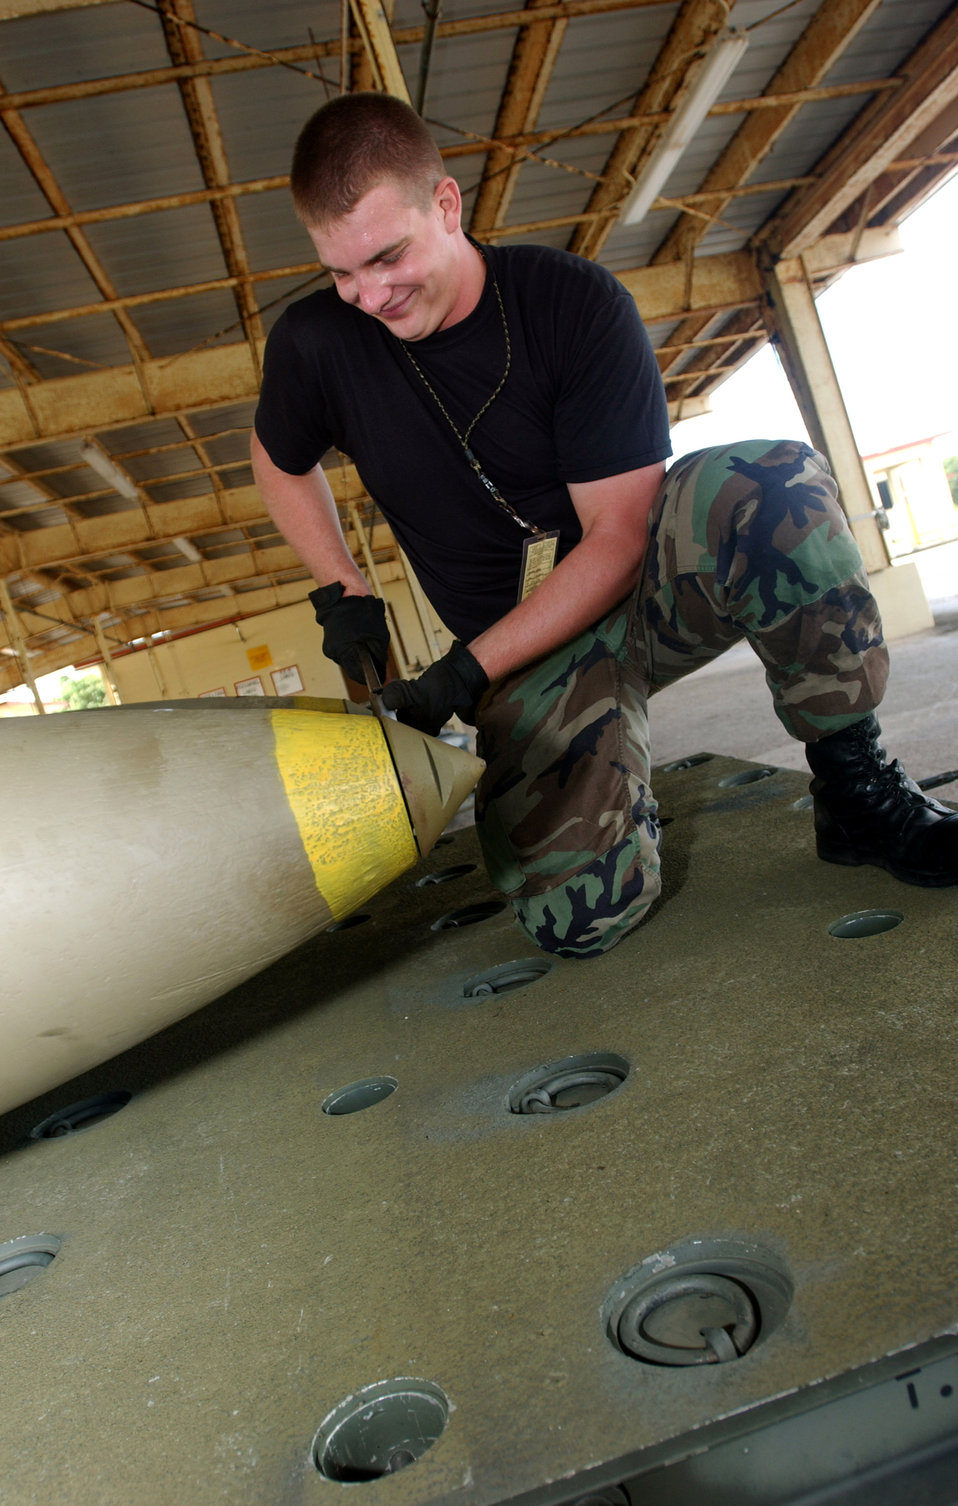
Without ammo it's just another airplane

Airman 1st Class Jaron Greene installs the tapered nose piece on a 2,000-lb bomb. Airman Greene is a munitions specialist with the 36th Munitions Squadron at Andersen Air Force Base, Guam.